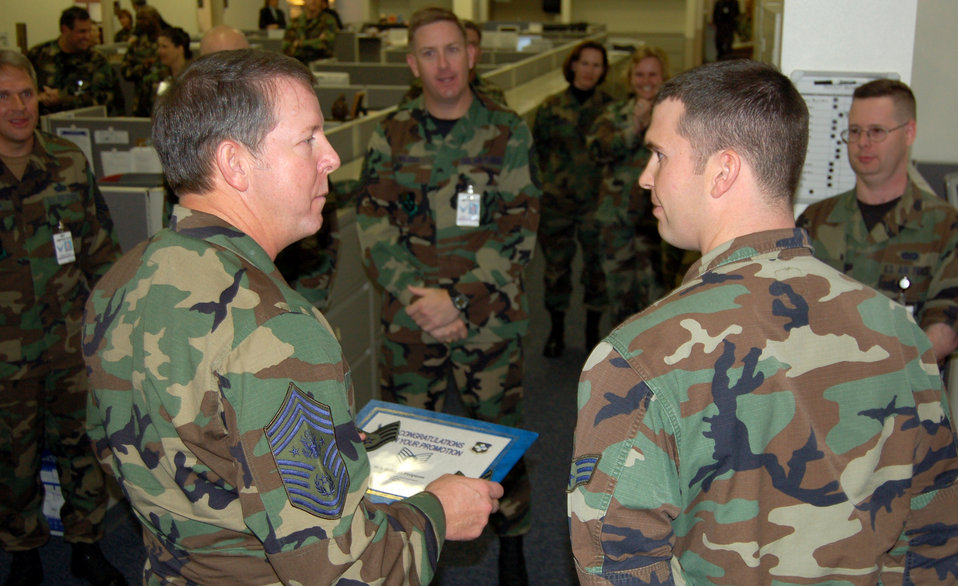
Chief McKinley visits San Antonio

Chief Master Sgt. of the Air Force Rodney J. McKinley congratulates Senior Airman Brian Ferguson on his promotion to staff sergeant during his visit to the Air Force News Agency in San Antonio, Texas, on Dec. 5. Airman Ferguson was deployed during the testing cycle and tested out of cycle earlier this month. The Air Force News Agency photojournalist received his promotion under the supplemental selection board.